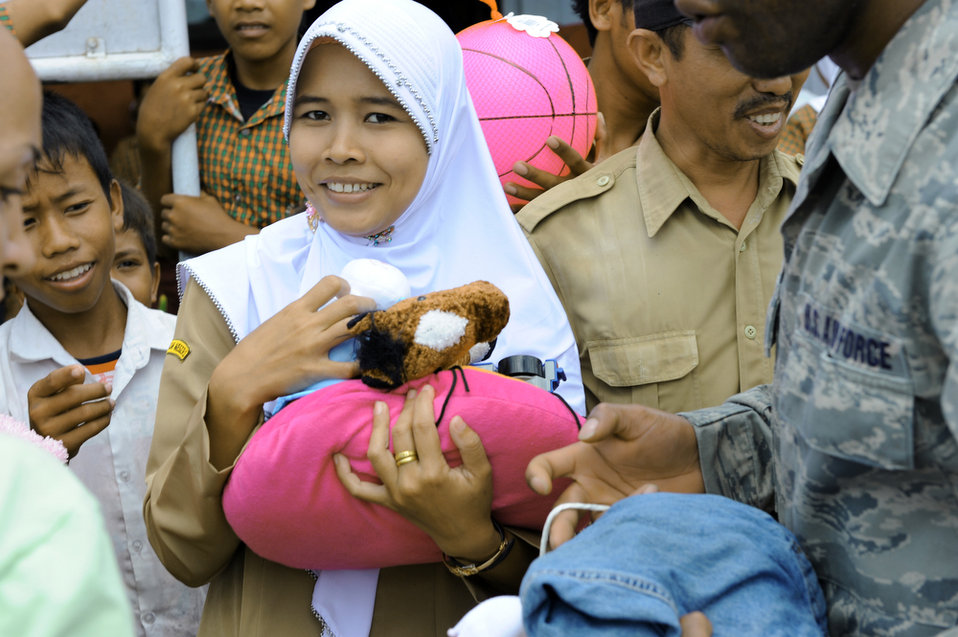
Cope West 2010

An Indonesian teacher from a local elementary school in Lanud Gorda Binuang, Indonesia, smiles after receiving more than 1,200 pounds of clothes, toys and sports equipment April 21, 2010, from Airmen from Yokota Air Base, Japan.